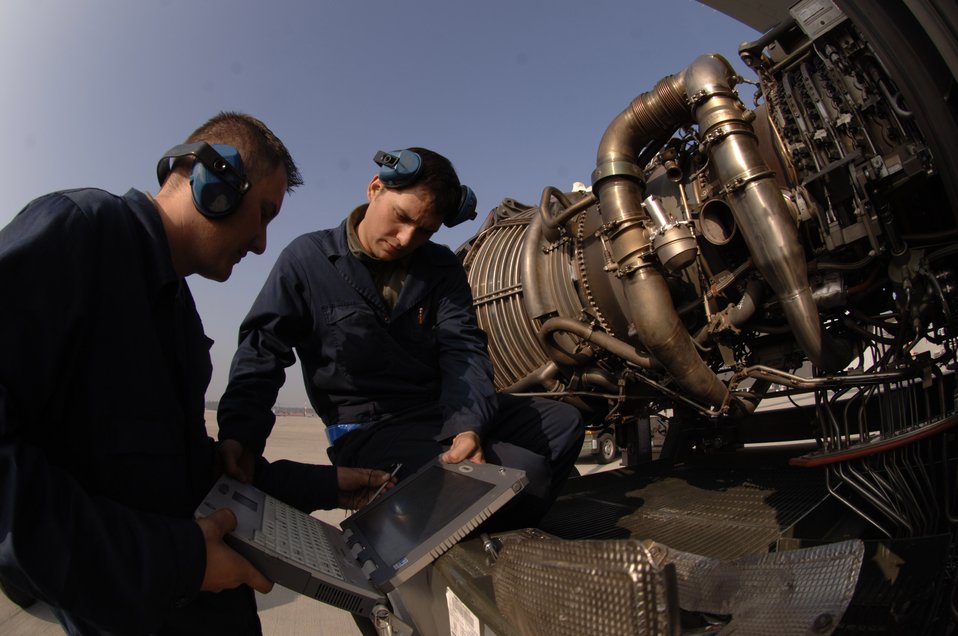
Ramstein flightline ops

Staff Sgt. Erik Marsaln (right) and Senior Airman Bill Metz consult engine technical orders on a laptop that will guide them through an engine change-out on a C-17 Globemaster III at Ramstein Air Base, Germany, Oct. 11. The Airmen are jet engine mechanics assigned to the 723rd Air Mobility Squadron.